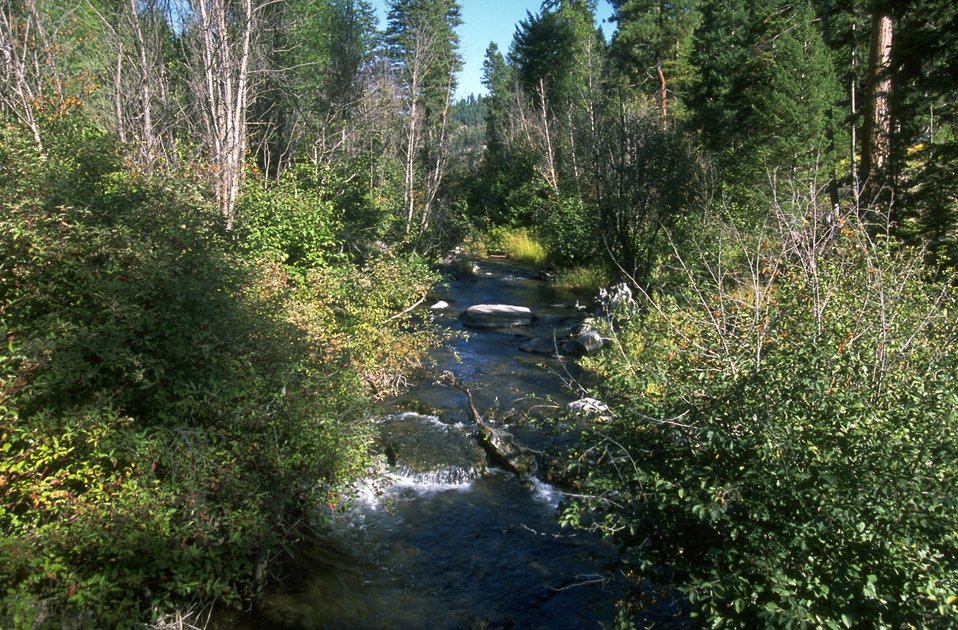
Gold Creek, a tributary of the Blackfoot River